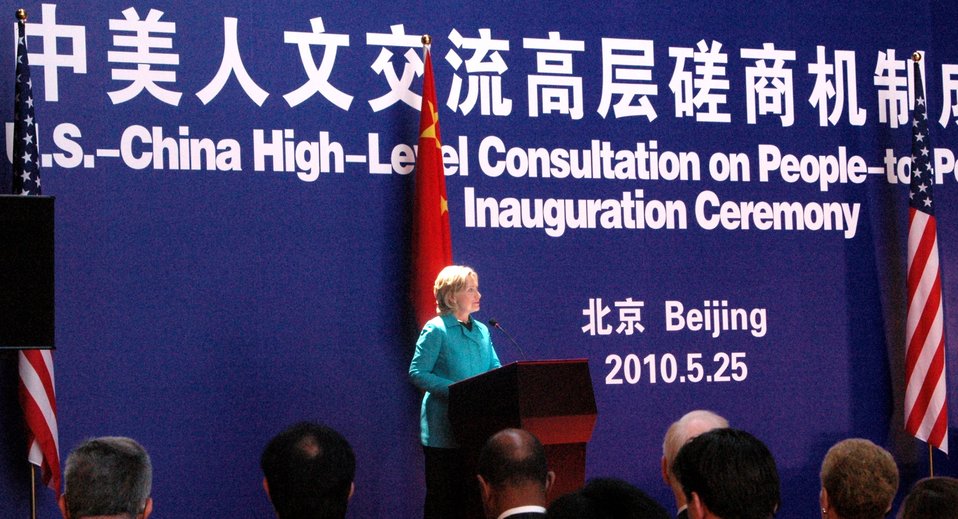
Secretary Clinton Delivers Remarks at the People-to-People Exchange Ceremony

U.S. Secretary of State Hillary Rodham Clinton delivers remarks at the U.S.-China Consultation on People-to-People Exchange ceremony at the National Center for the Performing Arts in Beijing, China, May 25, 2010.